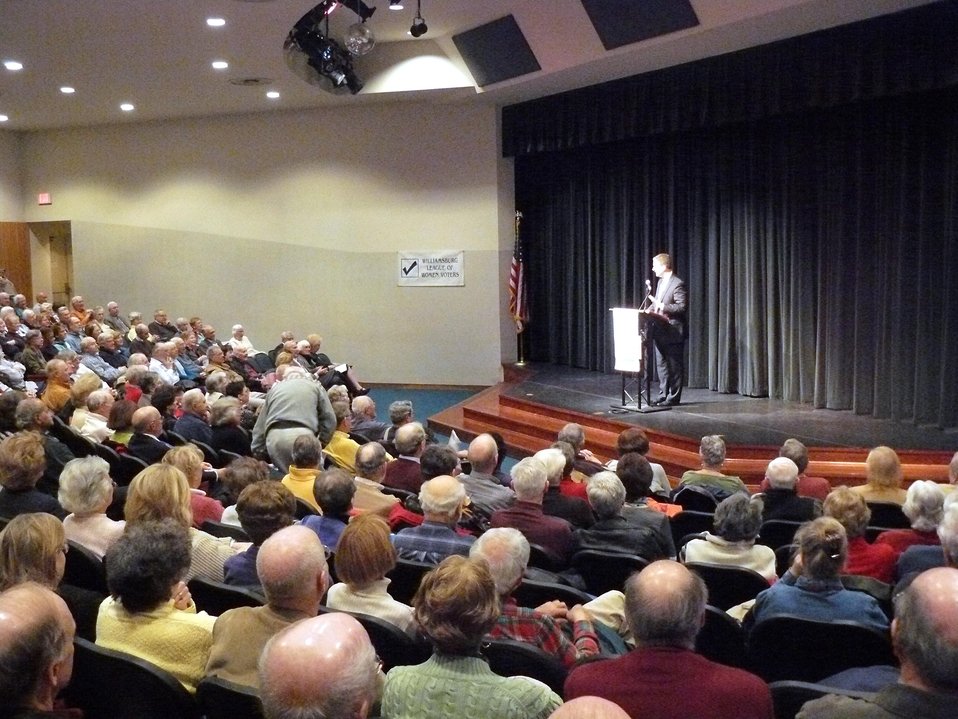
Director Dan Kritenbrink Speaks at 'Great Decisions Lecture'

Director for the Office of Chinese and Mongolian Affairs Dan Kritenbrink speaks at the “Great Decisions Lecture” hosted by the Virginia League of Woman Voters on March 16, 2010, Williamsburg, Virginia. [Williamsburg League of Women Voters]